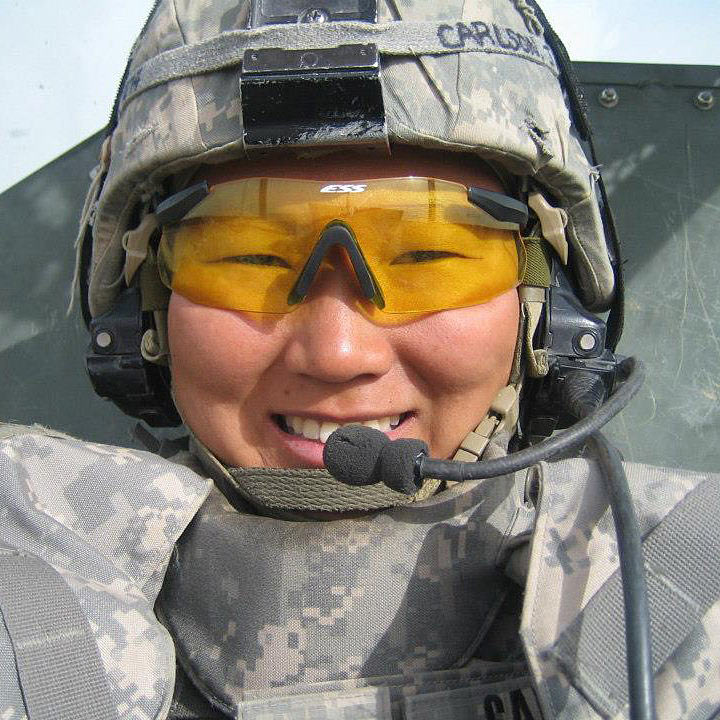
Jamie Carlson-Midwest Region

Jamie Carlson now works in the Midwest Region’s Division of Engineering- Secretary. She also served as a Specialist in the Army National Guard, Division of Engineering Secretary.